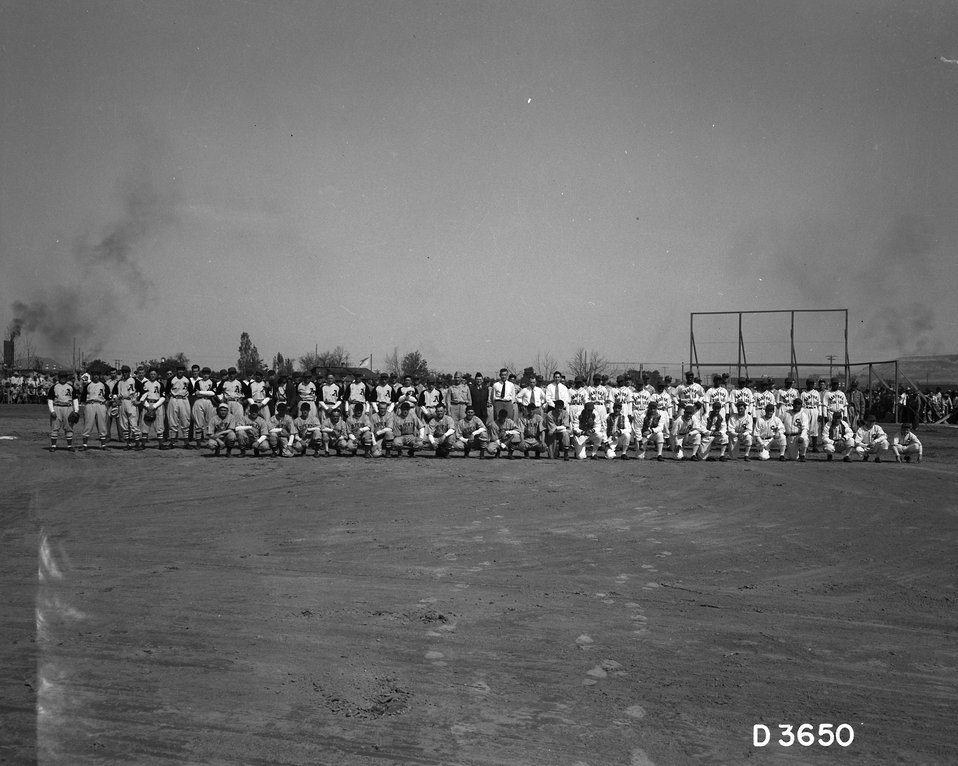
A Game of Baseball

DOE commissioned an exhibit documenting the contributions of African Americans to the Manhattan Project in 2002. The purpose of the exhibit was to commemorate the role of African Americans to the Manhattan Project by way of the Hanford Reservation. The exhibit consists of pictures taken from the Hanford archives and oral histories of African American working at the Hanford starting with wartime emergency construction in 1943, through operations, cold war expansions, and mission diversification.